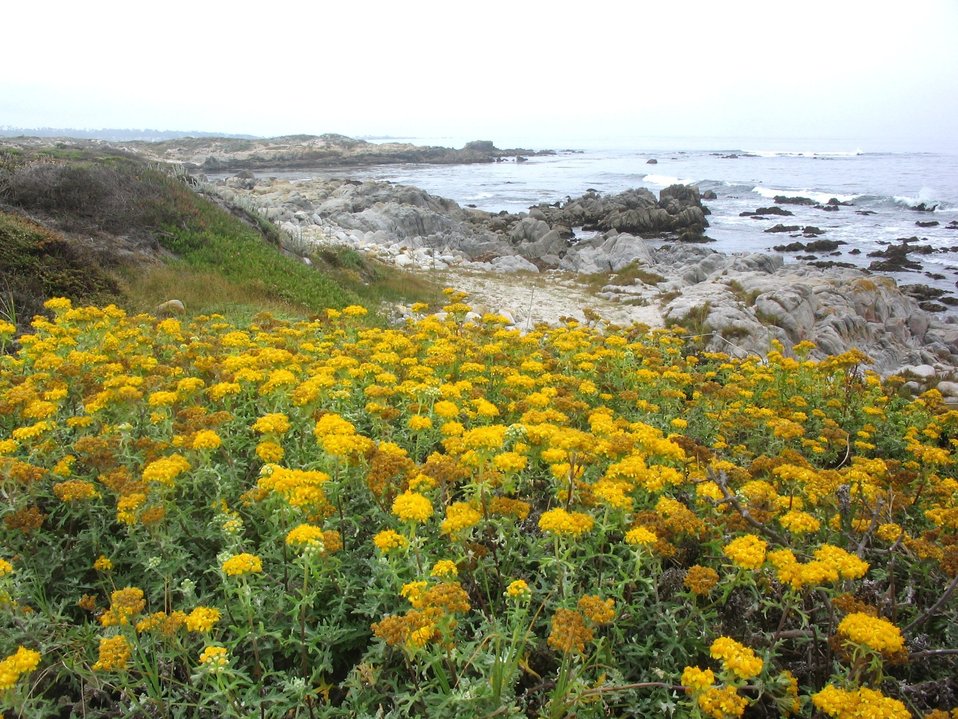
Eriophyllum staechadifolium artemisiaefolium. flowers with rocky shore of Pacific Grove